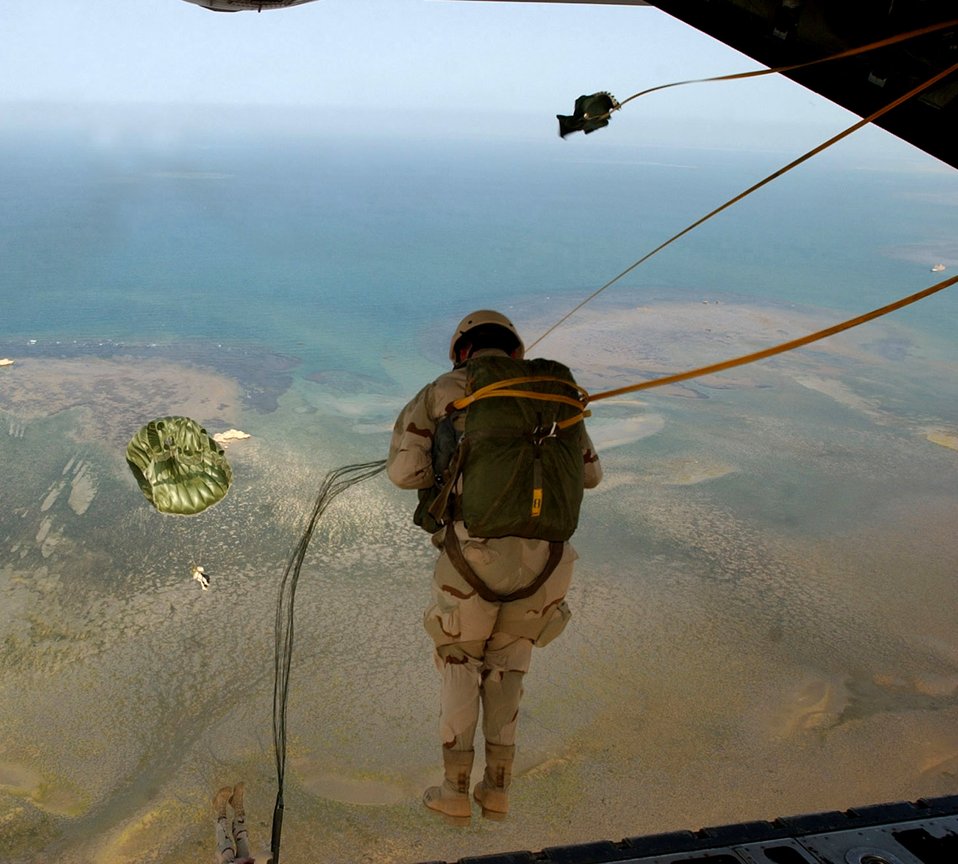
OVER AFRICA (AFPN) -- A pararescueman jumps from an HC-130 during a training mission recently. The Airman is from the 131st Rescue Squadron, which works hand in hand with the 449th Expeditionary Rescue Squadron. The training occurred while deployed in support of Combined Joint Task Force-Horn of Africa in Djibouti, Africa.